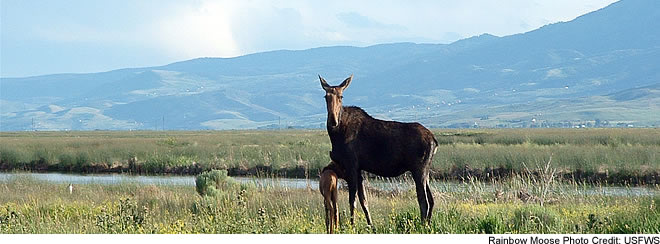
Bear Lake National Wildlife Refuge - Moose

A moose and her young are seen in Bear Lake National Wildlife Refuge, which is located in southeastern Idaho in the Bear Lake Valley.